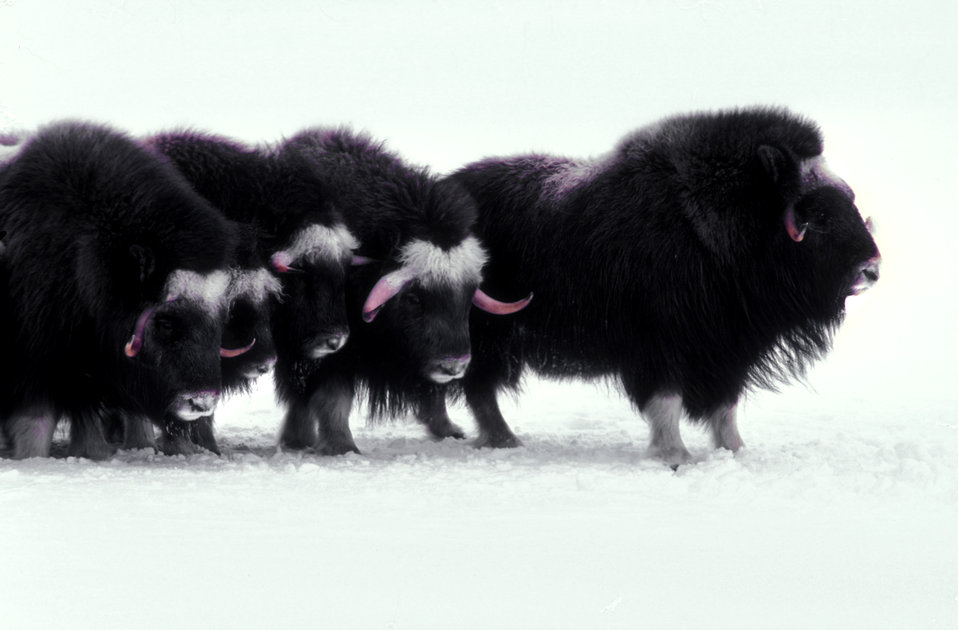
Muskoxen

Muskox were reintrocuced to Alaska at Nunivak Island in 1935 by the United States Fish and Wildlife Service, USFWS. They are believed to be survivors of the Pleistocene era and to have first come to North America from 200,000 to 90,000 years ago.
These sturdy animals can be domesticated and yield excellent meat, milk, and wool. The wool (qiviut) is very high in insulation value and is prized for its softness and lightness. Qiviut wool yarn sells for upwards of $80.00 per ounce (28 g).
These social animals live in small herds of 10 to 20 animals. When threatened they form a defensive perimiter, tail to tail, with their heads facing out in a stationary ring around their calves.

Photo Credit: USFWS
Photo Taken 1978